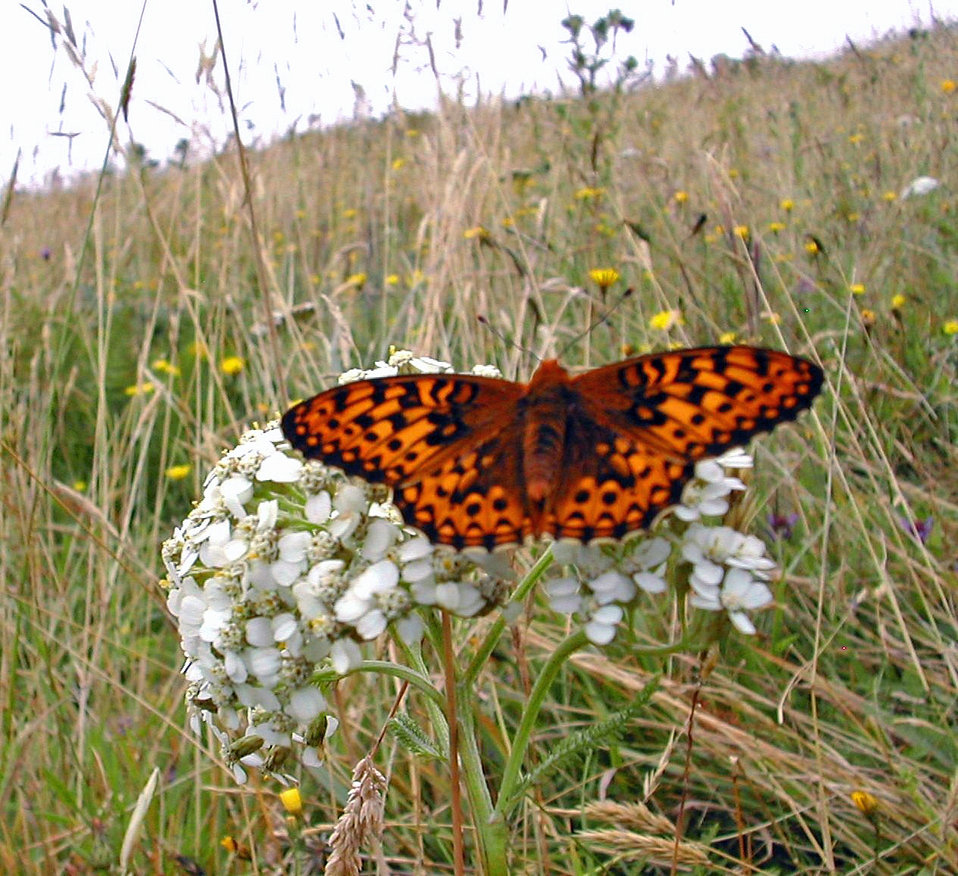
Silverspot Butterfly-a

An Oregon silverspot butterfly sits on a flower. The U.S. Department of Agriculture’s (USDA) Forest Service in partnership with multiple agencies and nonprofits has worked hard to help bring the silverspot populations back. The Forest Service and its partners have cleared out non-native plants and trees and replanted the early blue violet perennial that the silverspot caterpillar exclusively feeds on, as well as other native plants that the butterfly needs to survive.